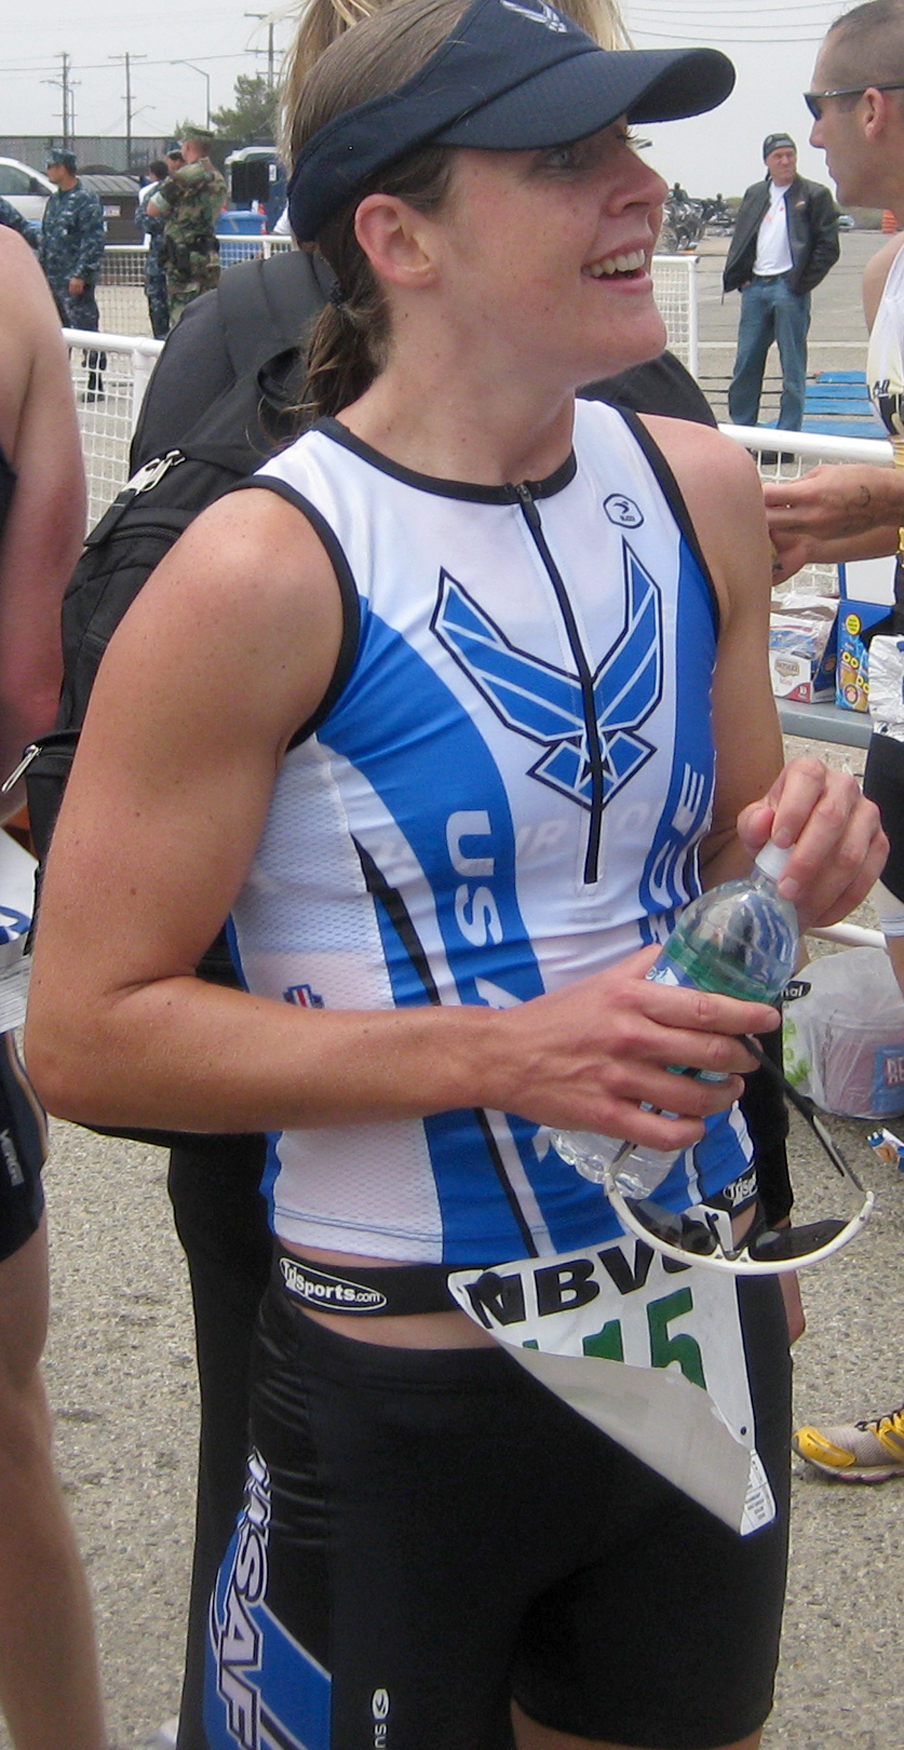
Air Force triathlon team wins at 2010 Armed Forces Triathlon Championship

1st Lt. Kathy Rakel came in first place in the women's competition at the 2010 Armed Forces Triathlon Championship June 5, 2010, at Naval Base Ventura County Point Mugu, Calif. The Air Force team took first place in every category, including the fastest male, fastest female and overall fastest team for both male and female categories. Lieutenant Rakel is assigned to , from Luke Air Force Base, Ariz.